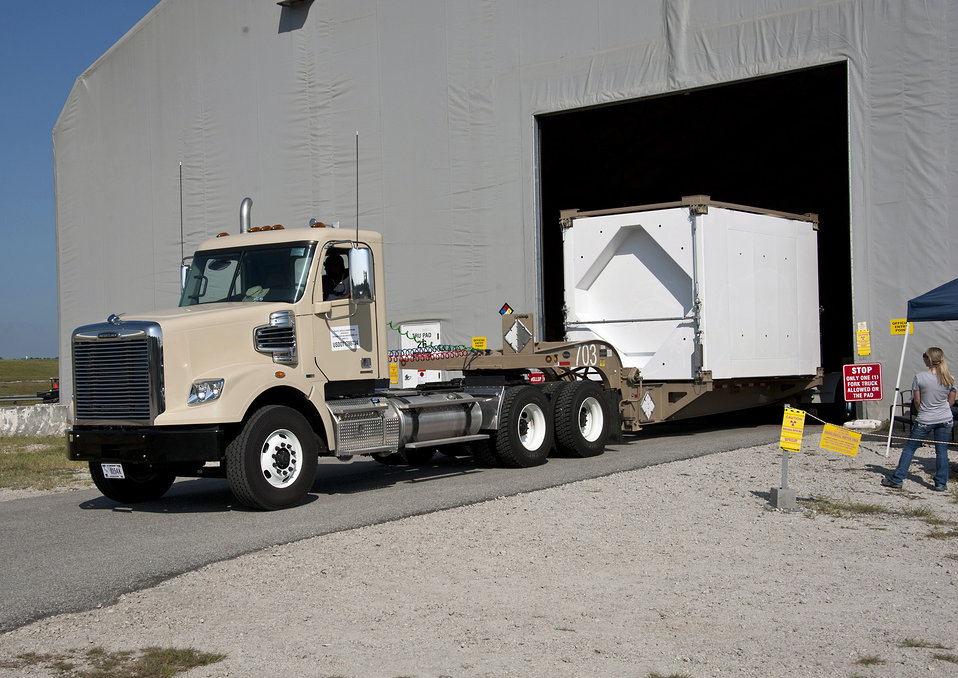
SRS 2012 Outlook: Transuranic Waste Program Set to Safely Reach Milestone

By the close of 2012, Savannah River Nuclear Solutions workers plan to complete an accelerated program to prepare 5,000 cubic meters of transuranic waste for shipment to the Waste Isolation Pilot Plant in New Mexico. By May, SRNS expects to be shipping TRU waste to WIPP, almost continuously, using six TRUPACT-III shipping containers like the one shown above.